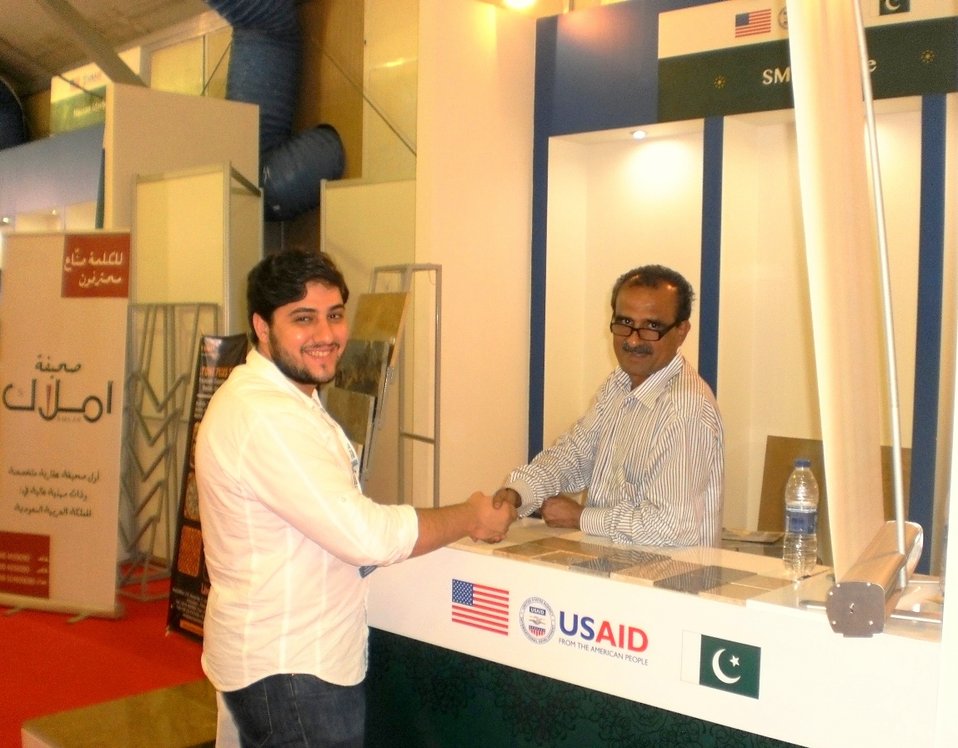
USAID Firms Project Marble and Granite sector participates in the Big 5, largest construction of Saudi Arabia

“Participating in this exhibition has introduced me to many new buyers, with many of whom I hope to realize business agreements”, Tariq Anis, Owner of SMB Marble, Pakistan.